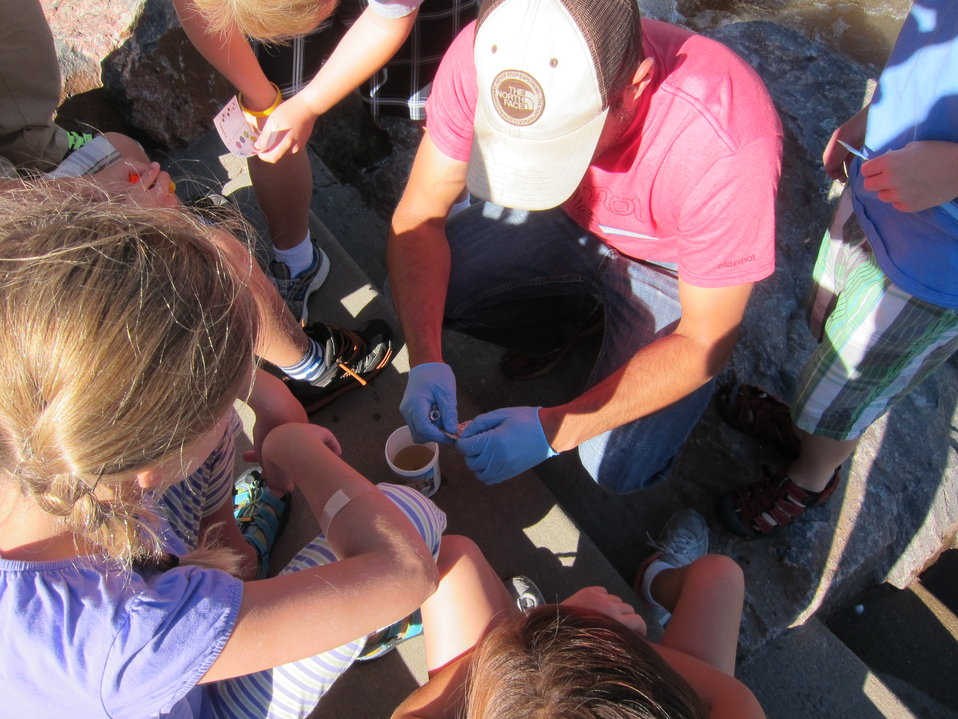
September 18, 2013 - Testing water from the South Platte River, Denver, CO

Students from two Denver elementary schools and volunteers from EPA and CH2M Hill took water samples and learned about turbidity, water temperature, and PH using a water monitoring kit.